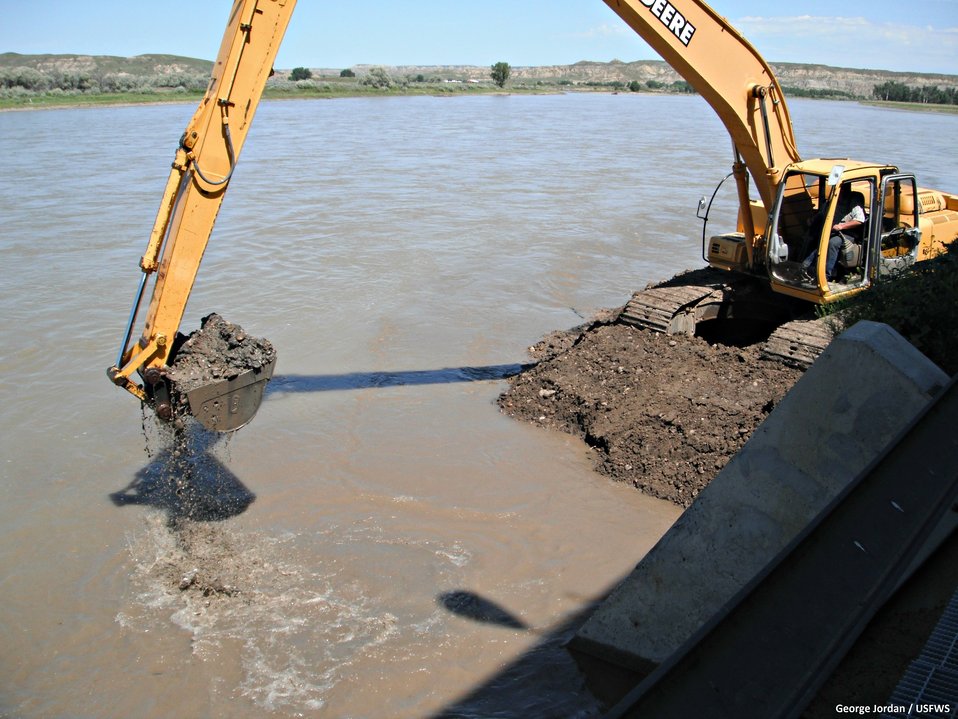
Spring cleaning

Each year, with the ebb and flow of the Yellowstone River's currents, sediments are moved around, picked up, and deposited. The sill upon which the screens set must be clean of all debris.